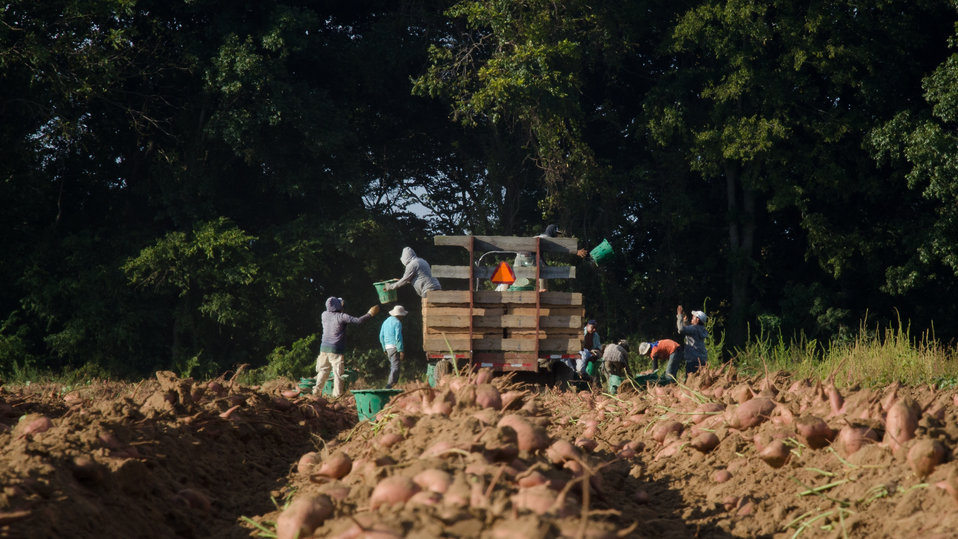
Harvested sweet potatoes are loaded onto a trailer at the Kirby Farms in Mechanicsville, VA on Friday, Sept. 20, 2013. The hand picked potatoes are taken to an onsite-heated warehouse to cure, a process that toughens the skin and brings the sweetness to a level normally expected in markets. Kirby Farms devotes 200 acres v to eggplant, spinach, beets, tomato, jalapeno peppers, melons and a variety of greens. Soybeans and small grain are grown on the remaining 300 acres. Using rotational crop practices allows Kirby Farms to double and triple crop yields. Wholesalers, who buy from this farm, sell the produce to major supermarkets in the Mid-Atlantic region, from North Carolina to Maryland. Restaurants in the local area prepare and serve the local bought produce to patrons in the Richmond, VA metropolitan area.